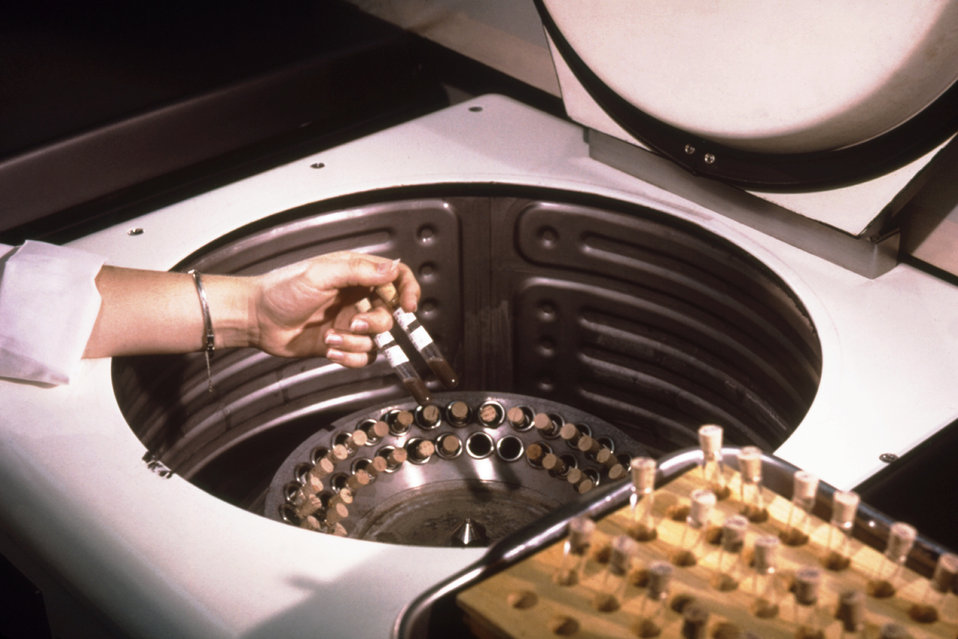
This CDC laboratorian is placing the previously created mosquito suspension into a centrifuge during an arbovirus study.